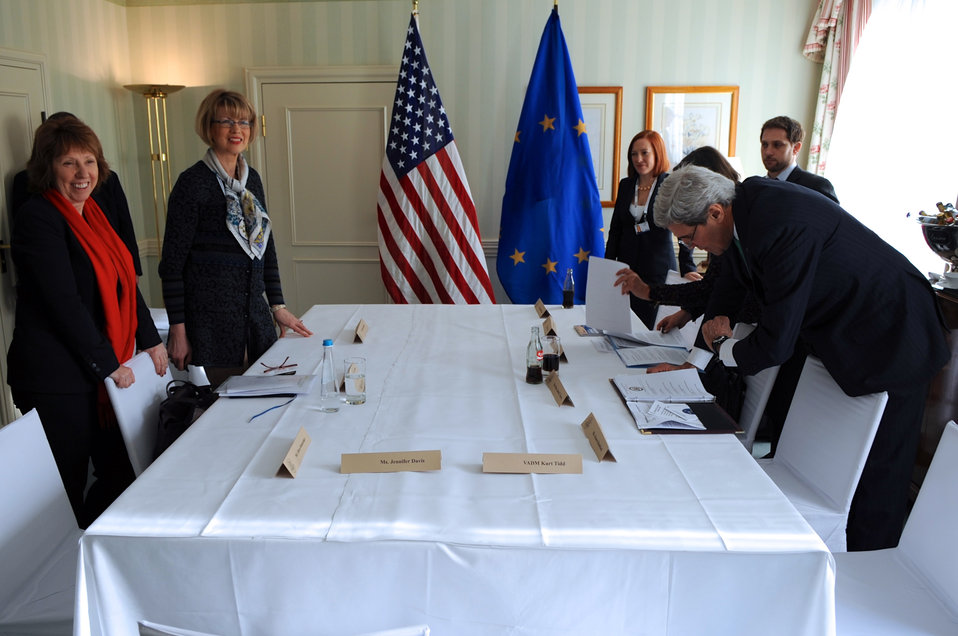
Secretary Kerry Prepares for a Meeting with EU High Representative Ashton

U.S. Secretary of State John Kerry looks over his notes before a meeting with European Union High Representative for Foreign Affairs Catherine Ashton on the sidelines of the Munich Security Conference in Munich, Germany, on February 1, 2014.